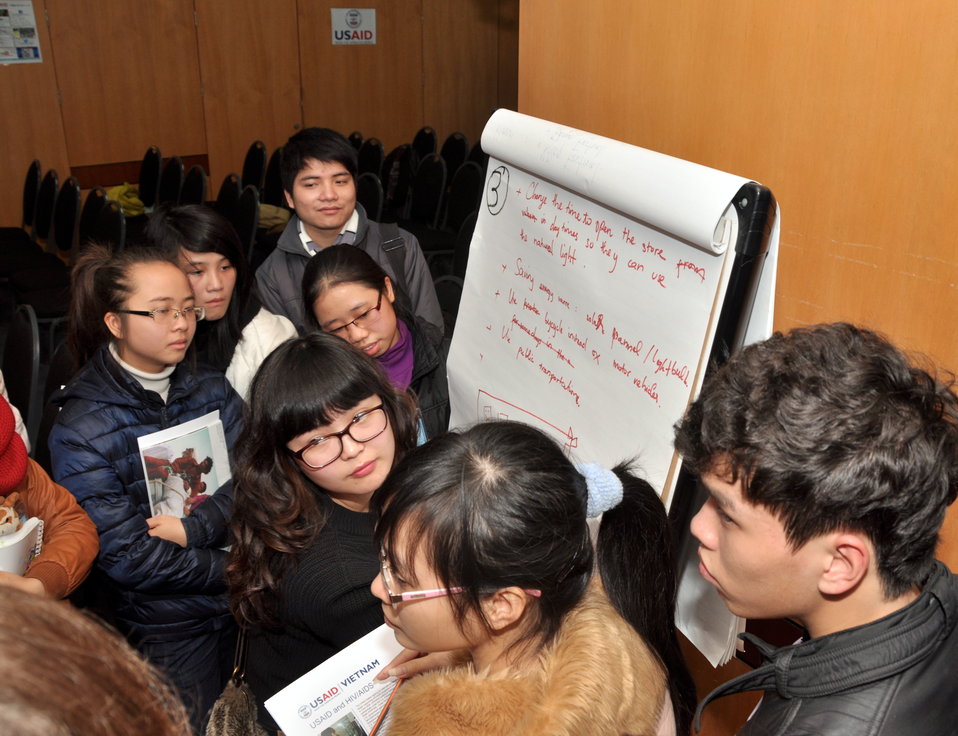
Speaker program on Climate Change and Clean Energy at the American Center

Hanoi, January 16, 2013